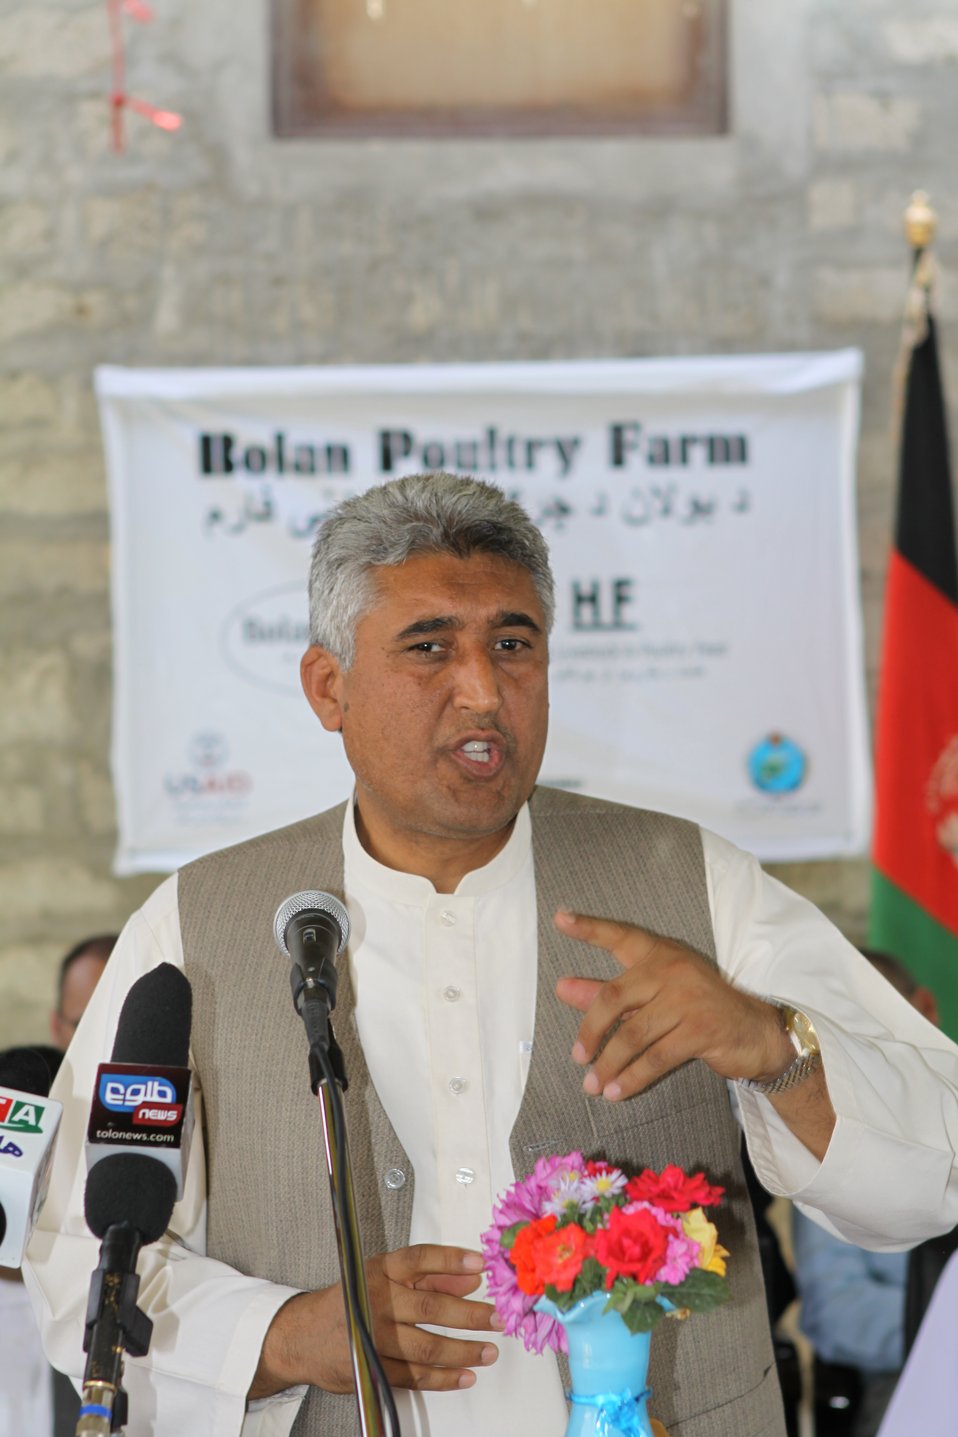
Bolan Poultry Farm